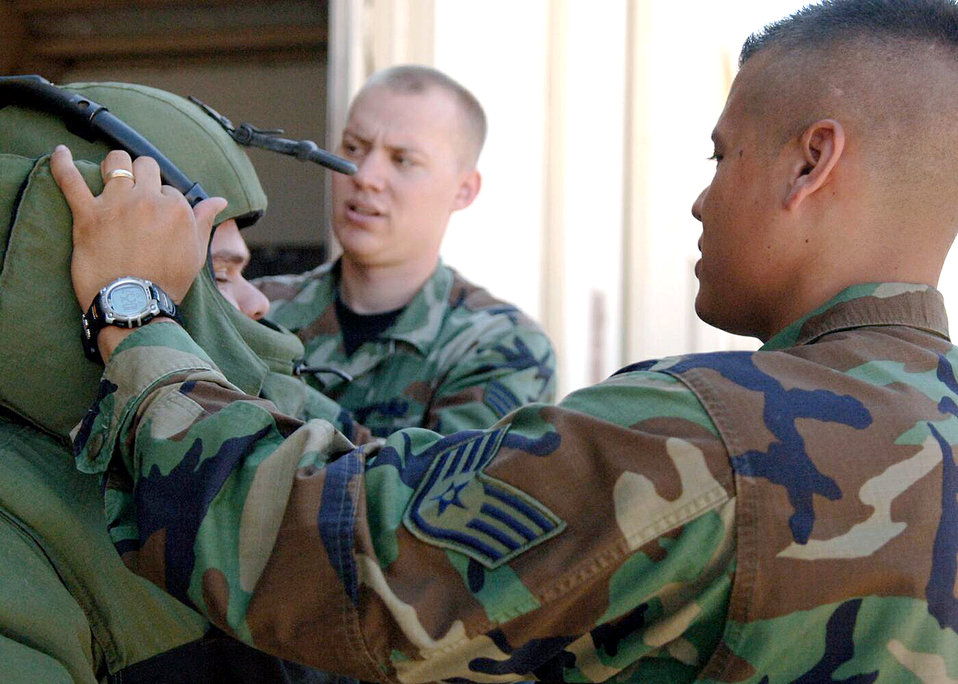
Make-A-Wish

Staff Sgt. Israel Delgado and Senior Airman Travis Eygabroad help place an explosive ordnance disposal suit on to Juan Peralta during a tour of Davis-Monthan Air Force Base, Ariz., on July 17. The Make-A-Wish Foundation teamed with Davis-Monthan to offer a tour of the base for Juan and other Make-A-Wish children as well as their families. The tour consisted of demonstrations by the EOD robot, base fire department and a weapons load crew for an A-10 Thunderbolt II. Sergeant Delgado and Airman Eygabroad are from the 355th Civil Engineering Squadron.